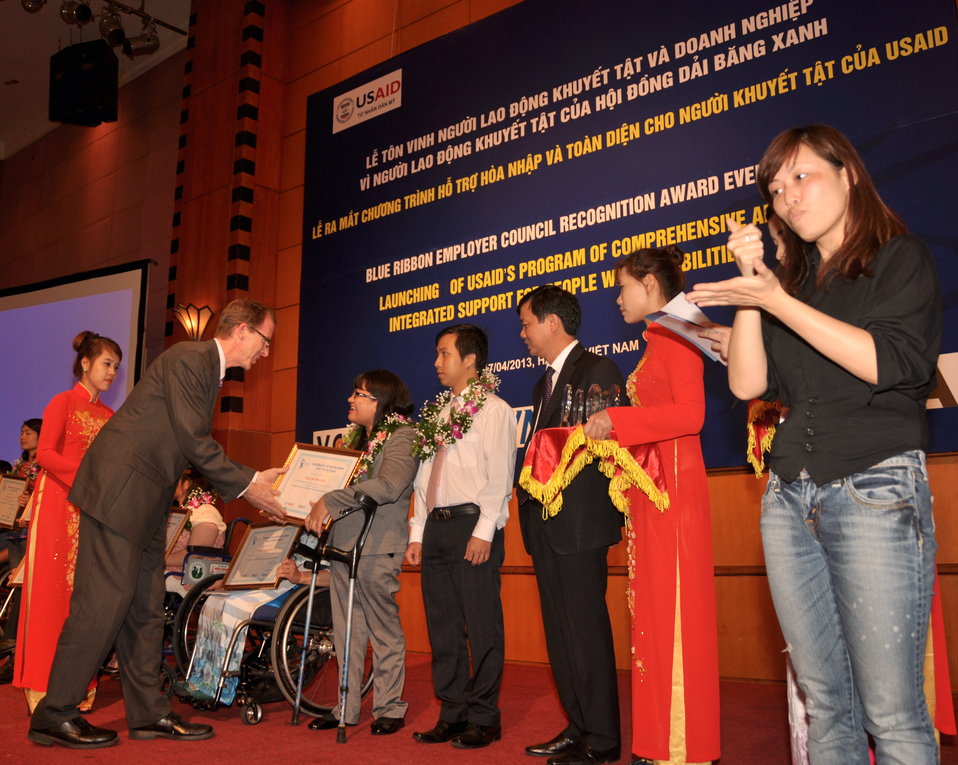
USAID Mission Director Joakim Parker awards employees with disabilities

Hanoi, April 17, 2013